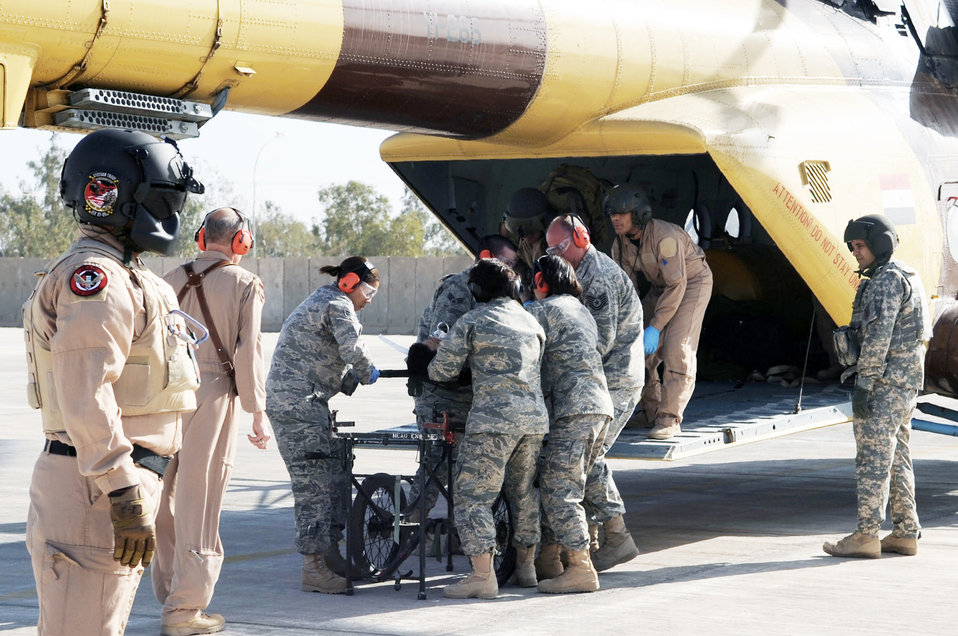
Air Force medics partner with Iraqi Ministry of Defense hospital

Airmen from the 332nd Expeditionary Medical Group unload a patient from an Iraqi helicopter during medical evacuation training for the Iraqi air force Dec. 21, 2009, at Joint Base Balad, Iraq. The purpose of the training is to help Ministry of Defense officials strengthen their health care system for Iraqi troops.